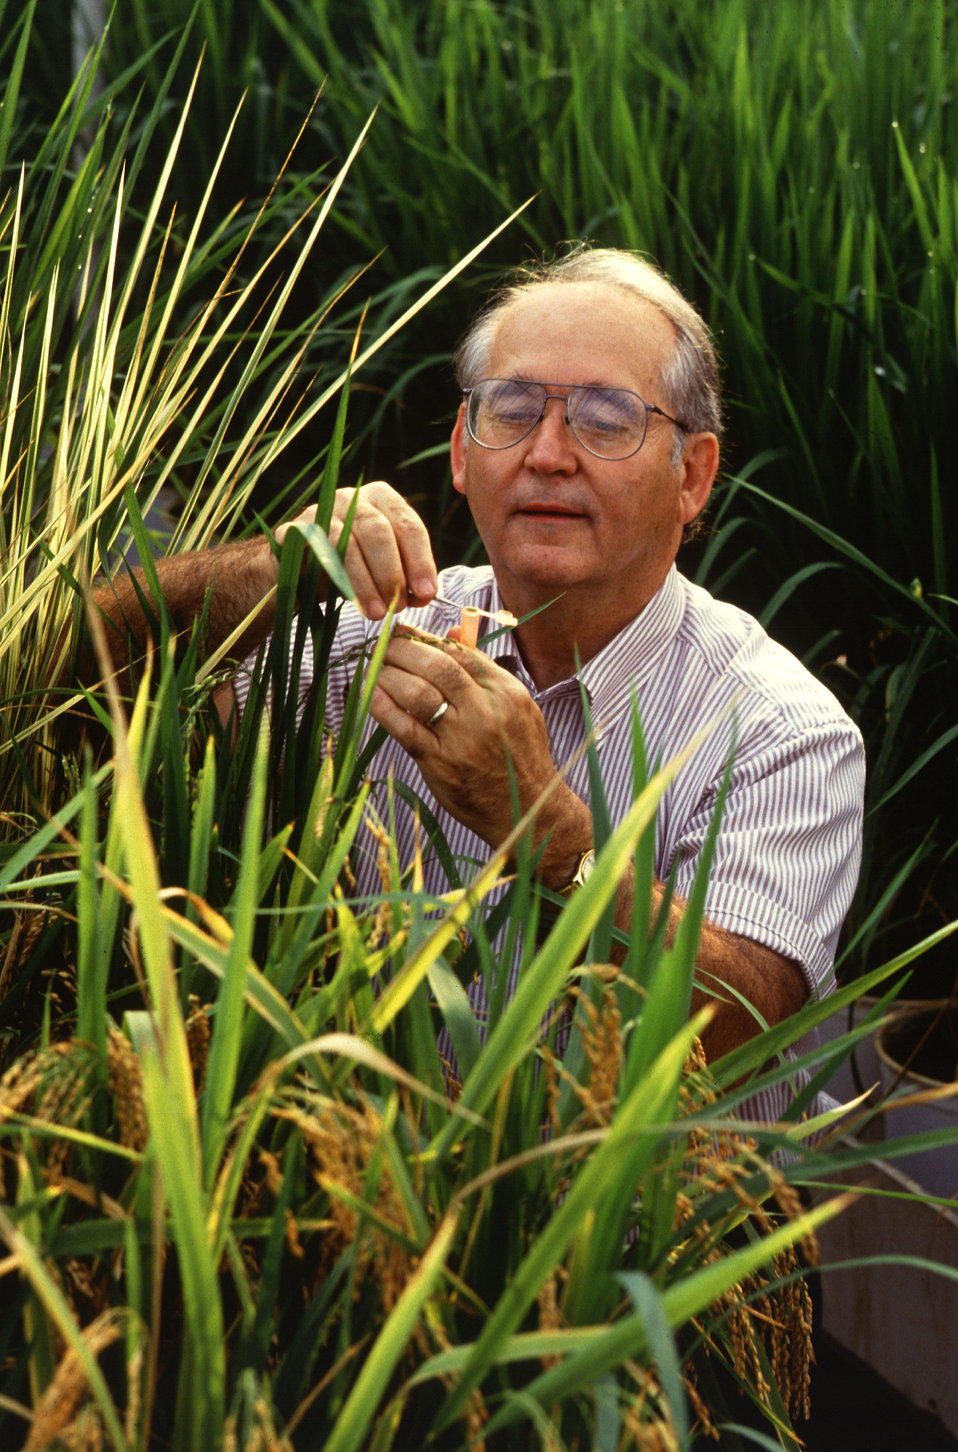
More nutritious rice could come from descendants of these plants, whose ancestors were grown by U.S. Department of Agriculture (USDA) Agricultural Research Service (ARS) scientist Gideon Schaeffer from tissue-cultured cells specially selected for their high lysine content.